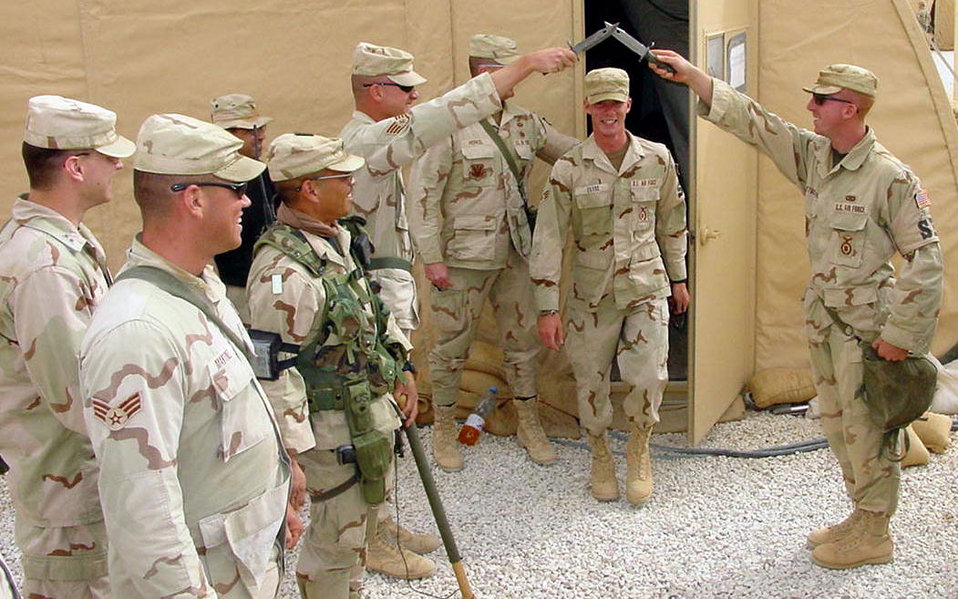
The groom...

OPERATION IRAQI FREEDOM -- Senior Airman James Evans walks out the door and into a security forces guide-on following his marriage by proxy ceremony. Evans is a security forces airman currently deployed with the 444th Air Expeditionary Group.